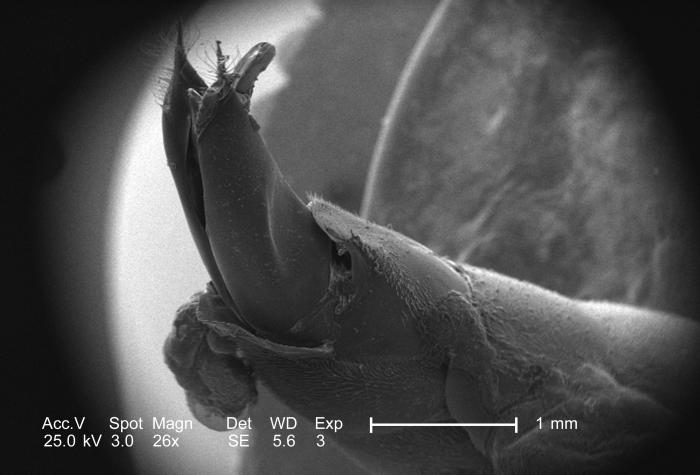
Under a low magnification of 26x, this scanning electron micrograph (SEM) depicted the distal abdominal region of a small hymenopteran insect found deceased in the suburbs of Decatur, Georgia.